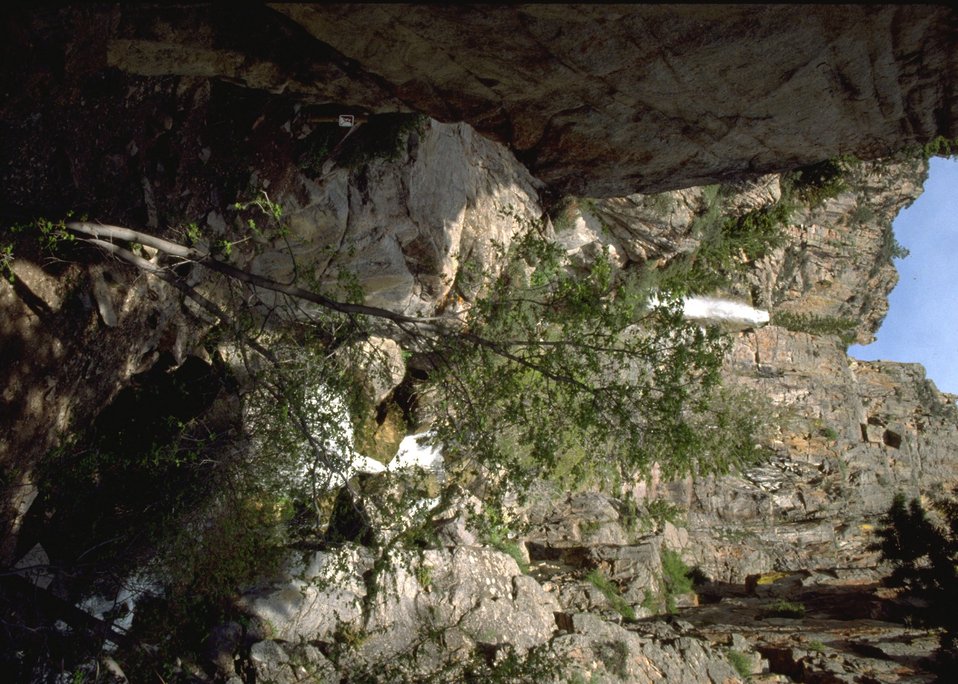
Scenic view of waterfall.